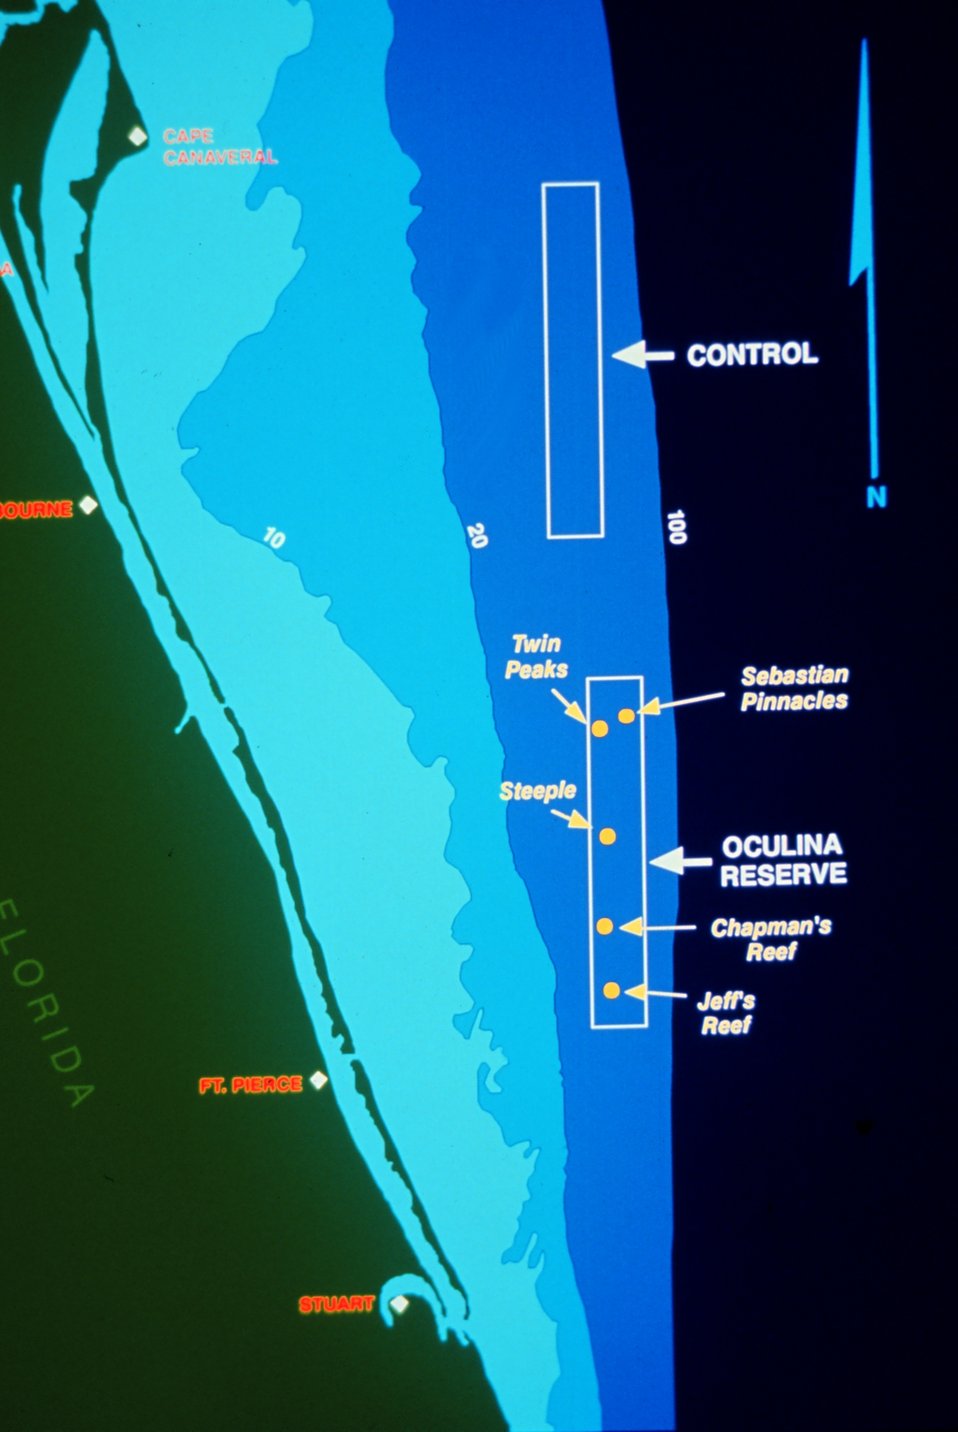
Map showing location of oculina reserve.